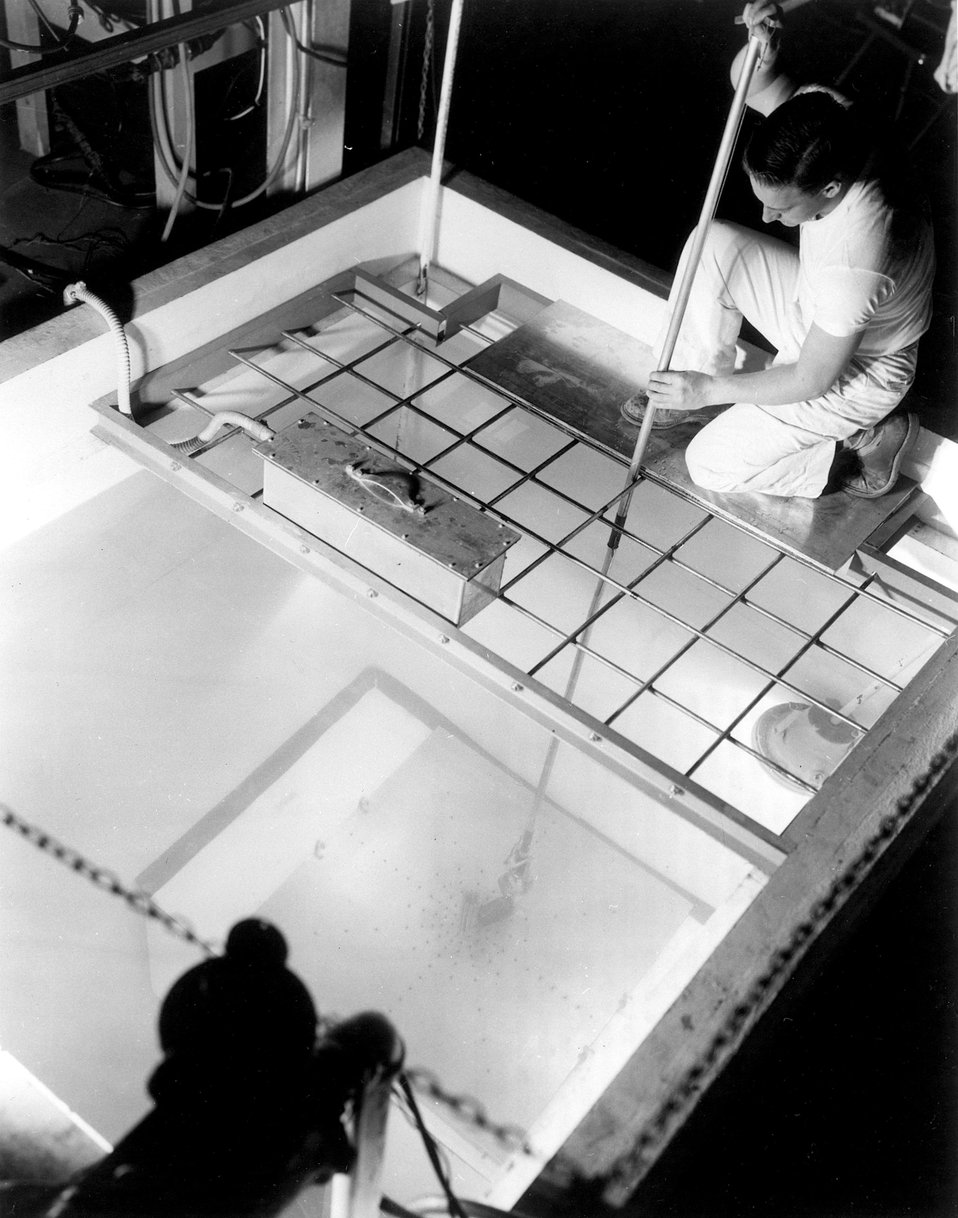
Schenectady, New York... Cobalt Gamma Source installation at AEC's Knolls Atomic Power Laboratory. In this 3400-Curie water-shielded Cobalt gamma source installation, at the AEC's Knolls Atomic Power Laboratory, large objects may be irradiated at high dose rates to determine radiation resistance, by putting them close against the source array located at the bottom of the pool. Circa 1956.